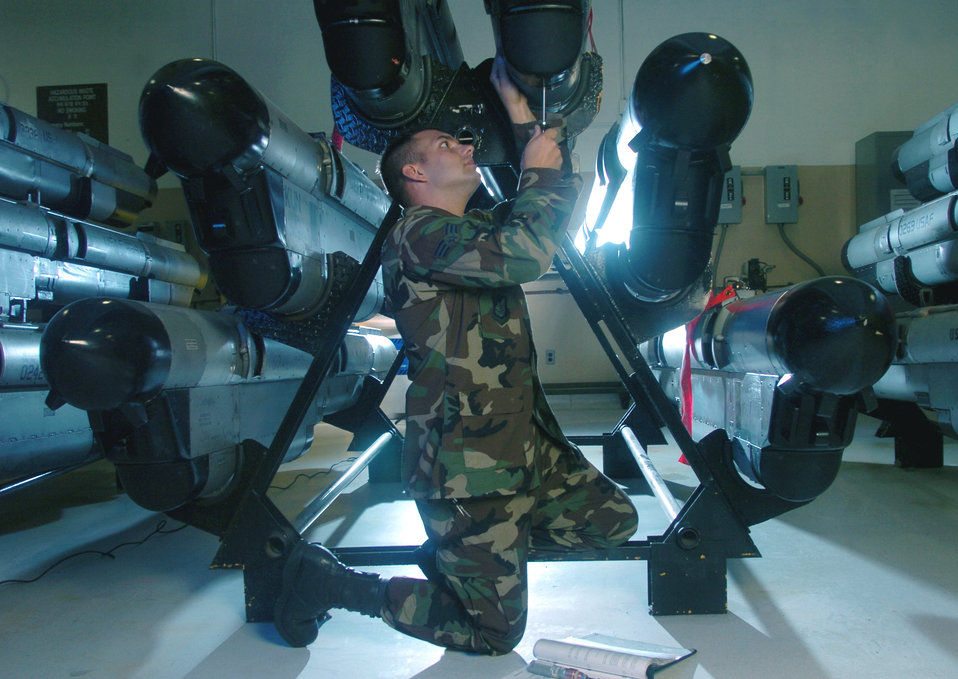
Protecting fighters

KUNSAN AIR BASE, South Korea -- Senior Airman Edward Youmans inspects the heat exchanger of an electronic countermeasures pod here. The ECM technicians maintain the F-16 Fighting Falcons pods used to defeat sophisticated anti-aircraft defense systems. Airman Youmans is assigned to the 8th Maintenance Squadron.